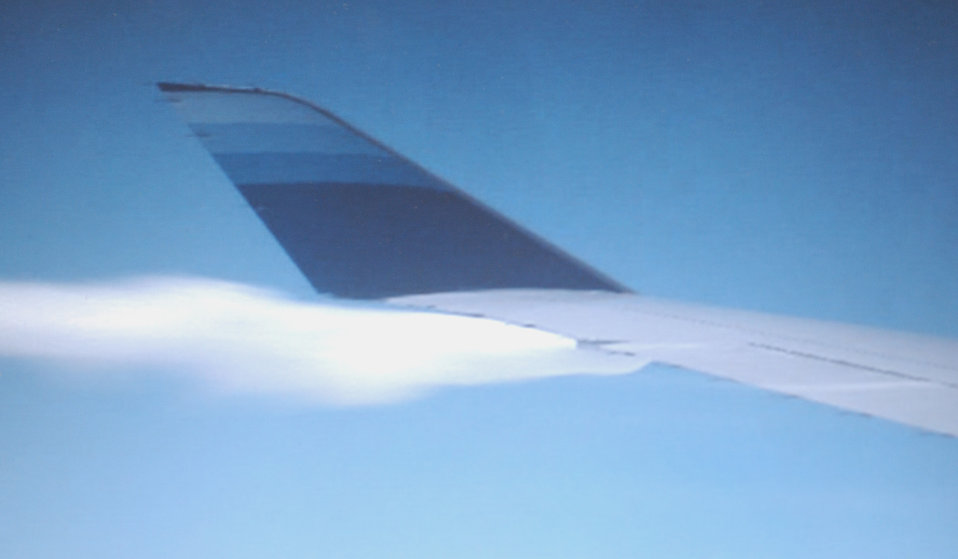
Airman spots aircraft fuel leak at 35,000 feet

Staff Sgt. Bartek Bachleda spots a fuel leak on a civilian aircraft on a flight from Chicago to Narita airport, Japan. Sergeant Bachleda alerted the pilots and aircrew about the leak, and the ranking pilot made the decision to divert the flight to San Francisco. Sergeant Bachleda is a 909th Air Refueling Squadron boom operator at Kadena Air Base, Japan.